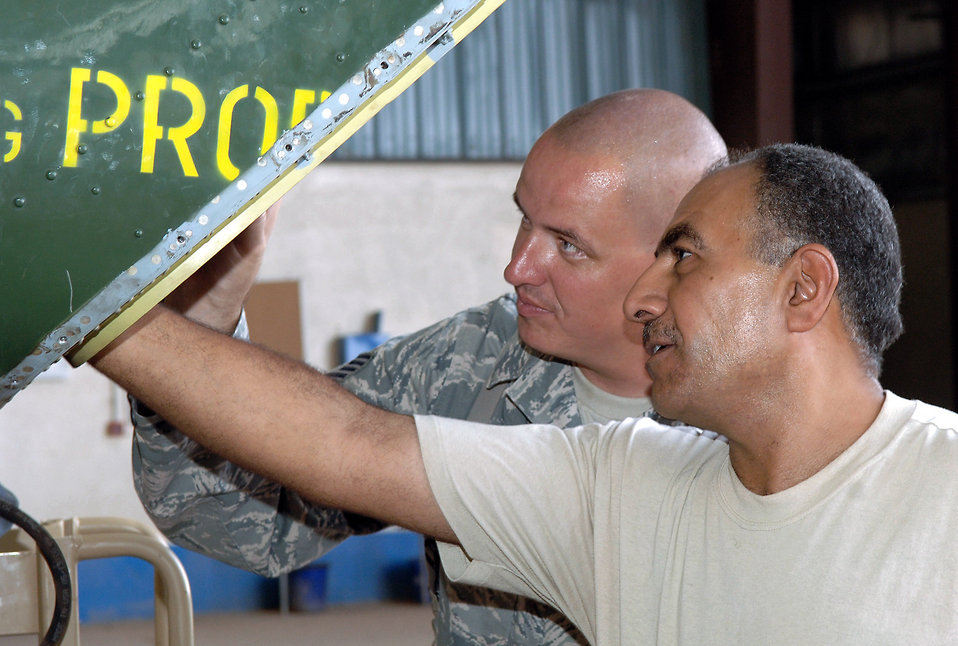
Iraqi airmen keep helicopter fleet flying

Tech. Sgt. Lee Everhart and Iraqi air force Lt. Col. Auday Yassen Yousif perform maintenance on an Mi-17 Hip helicopter in a hangar Sept. 11 at Taji Air Base, Iraq. The helicopter made a hard landing and struck its tail skid against the ground during a recent training mission, requiring a close inspection of its tail section. Colonel Youssif is chief engineer of second-line maintenance for the Iraqi air force technical wing. Sergeant Everhart, an Mi-17 air adviser with the 770th Air Expeditionary Advisory Squadron, is deployed from Robins Air Force Base, Ga.